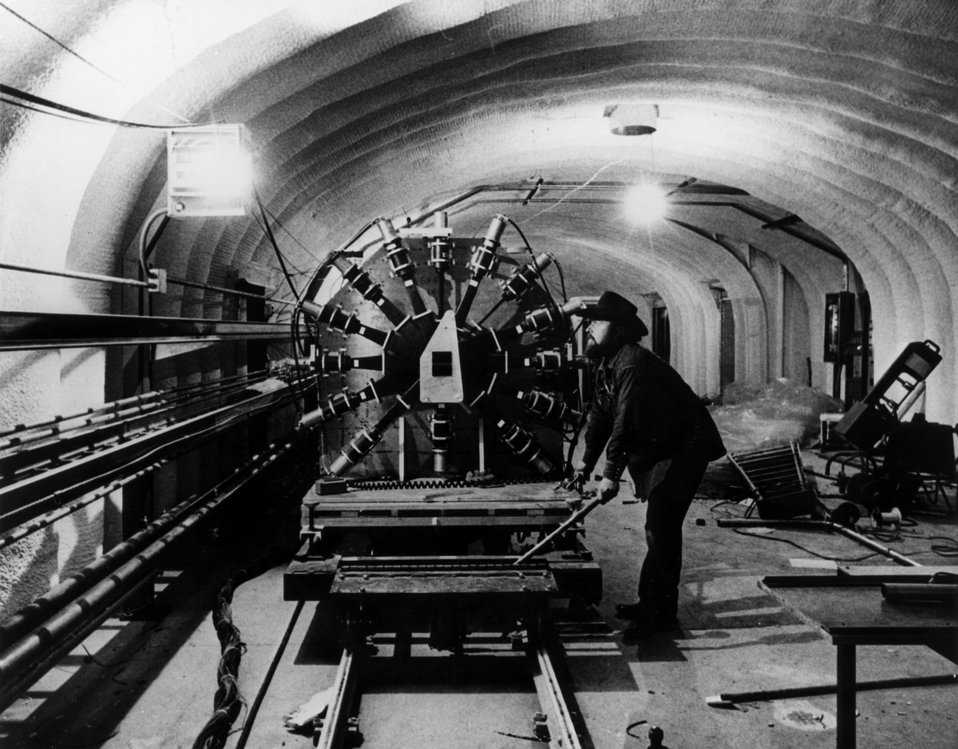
caption illegible. c. 1974